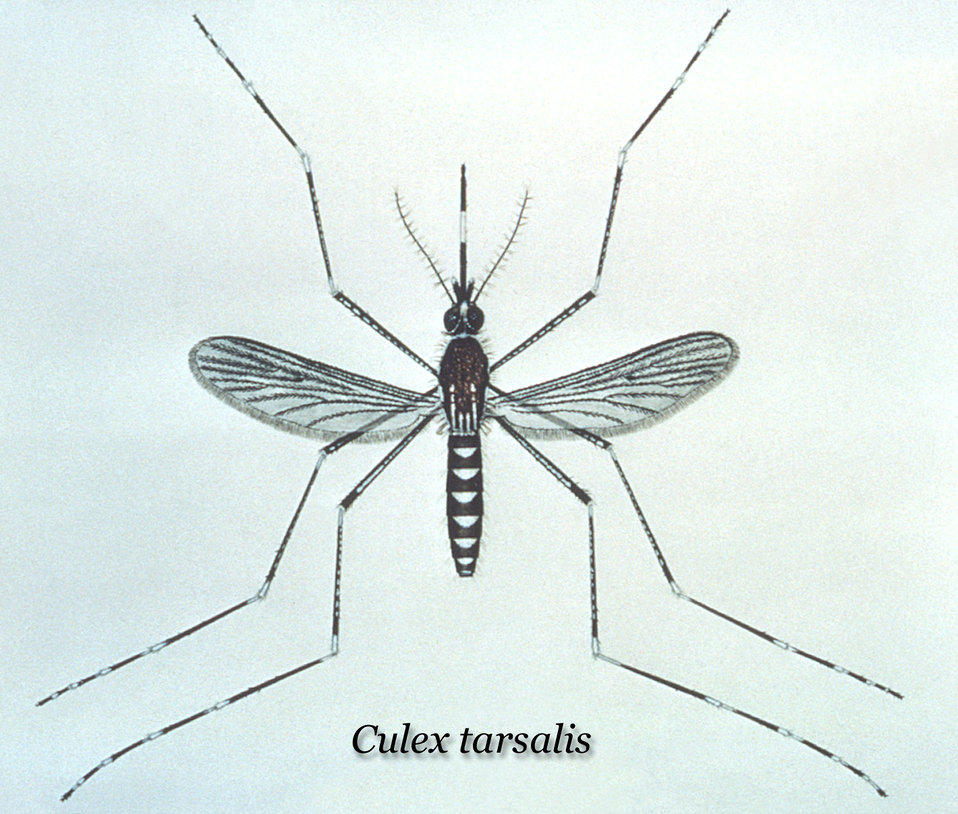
This illustration depicts a dorsal view of a Culex tarsalis mosquito, a vector of many epidemiologic-based diseases.